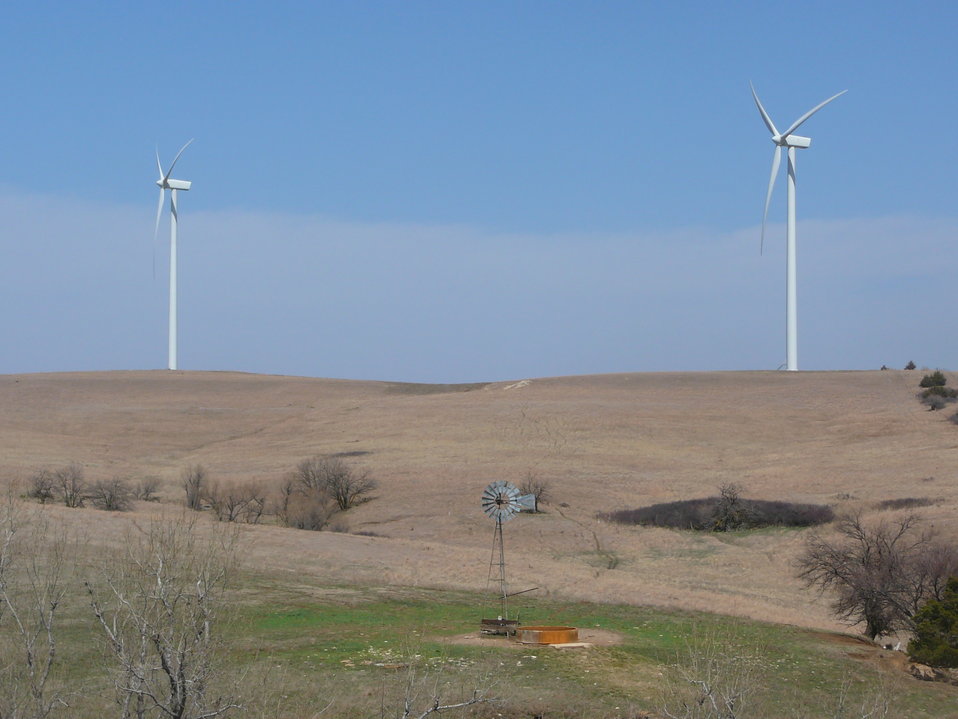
Change Is Inevitable

Windmills from the past and present on the high plains.

Credit: Judson Spicer / USFWS

Photo Contest Entry #150